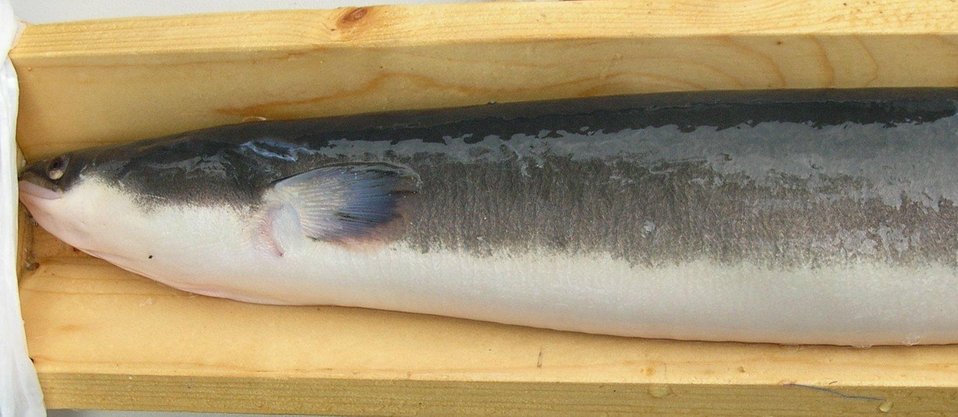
American eel

The American eel is a smooth and snake-like fish that feeds on worms, small fish, mollusks and crustaceans.